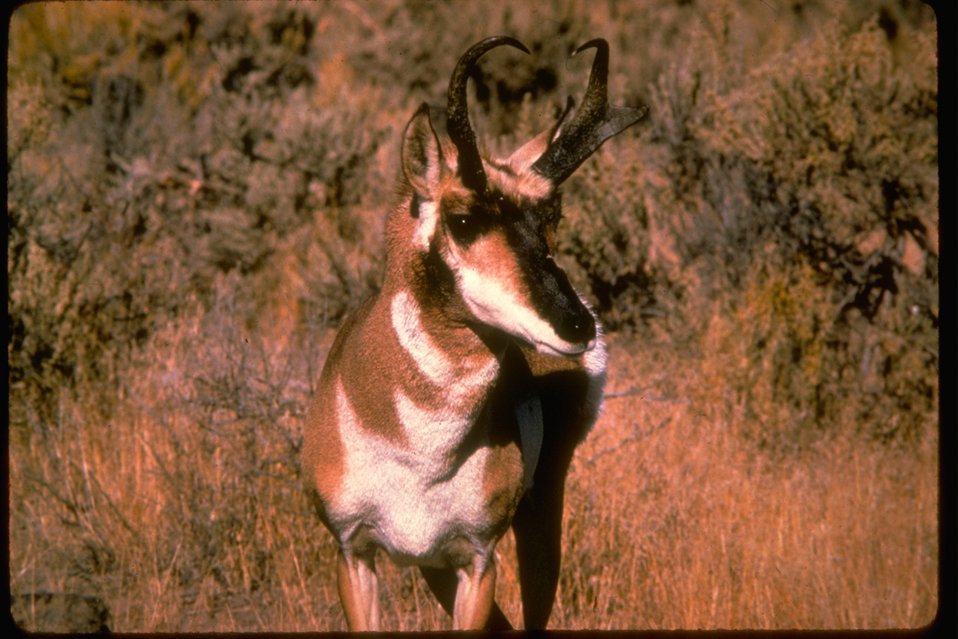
Prong Horn